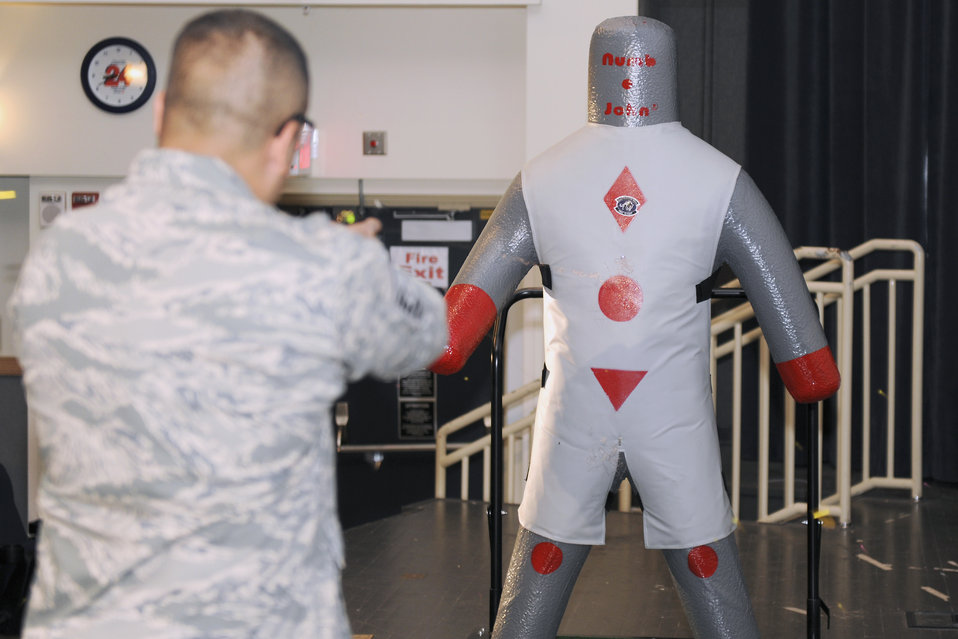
Tasers at Kunsan

Master Sgt. Gabriel Gonzalez demonstrates proper technique when using a Taser to subdue subjects. The Taser is the newest non-lethal-force asset option for security forces members to use to contain potentially harmful situations. Sergeant Gonzalez is a member of the 8th Security Forces Squadron.